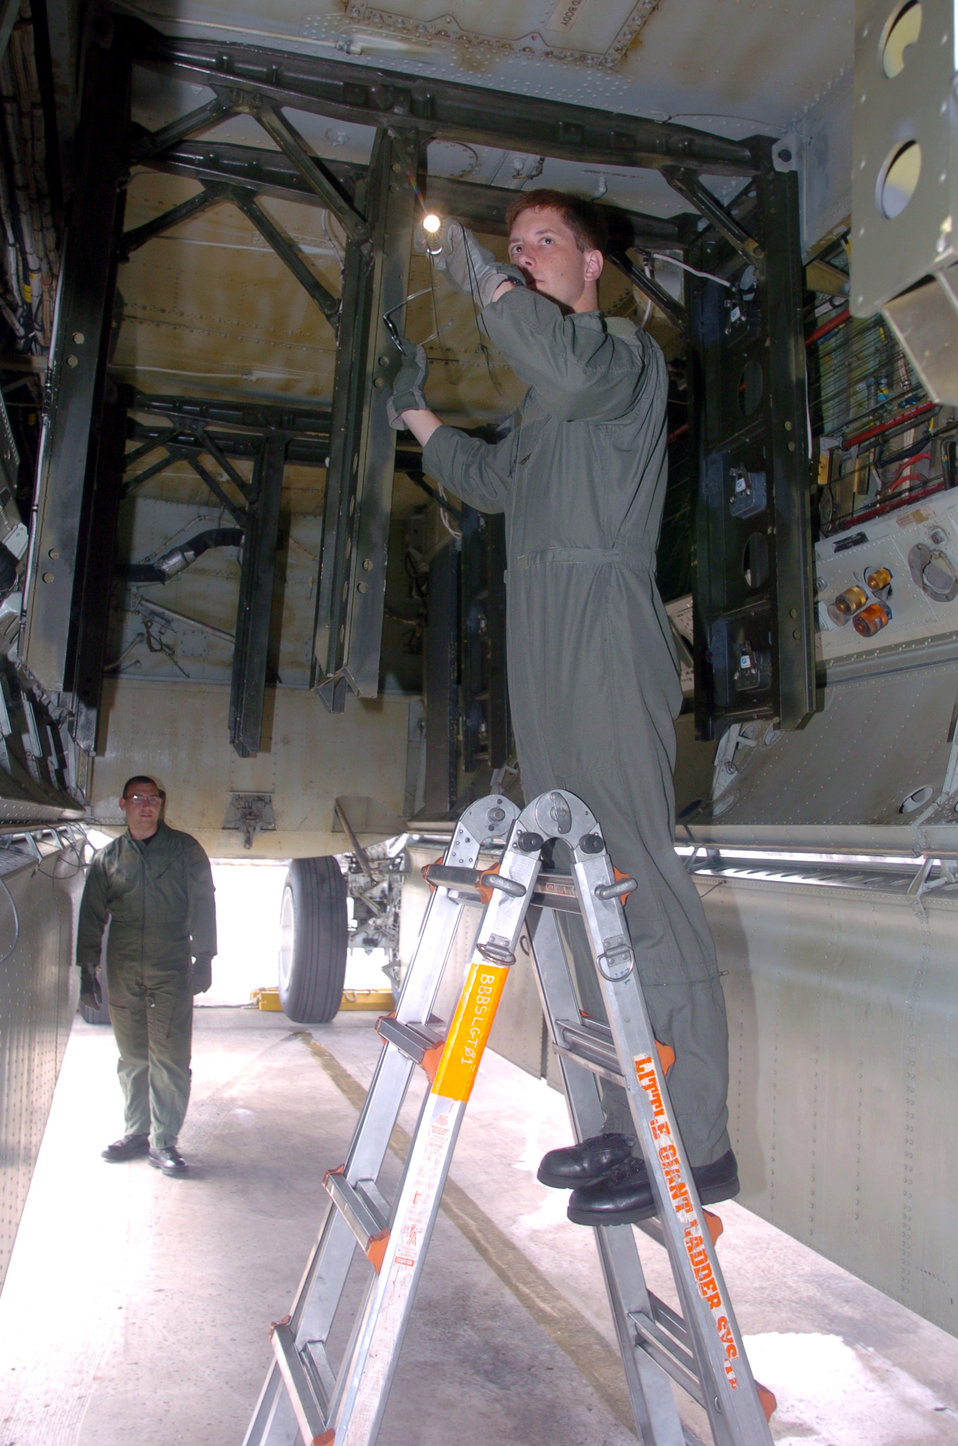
Radar Detector

ANDERSEN AIR FORCE BASE, Guam -- Capt. Robby Castle (foreground), a radar navigator, and 2nd Lt. Jeremy Fairaizl, an electronic warfare officer, inspect inside the bomb bay of their aircraft before a mission here. Six B-52s and about 300 support people from Minot Air Force Base, N.D., are the first to deploy here following the decision to station a rotating bomber force here. Both Airmen are from the 23rd Bomb Squadron at Minot AFB.